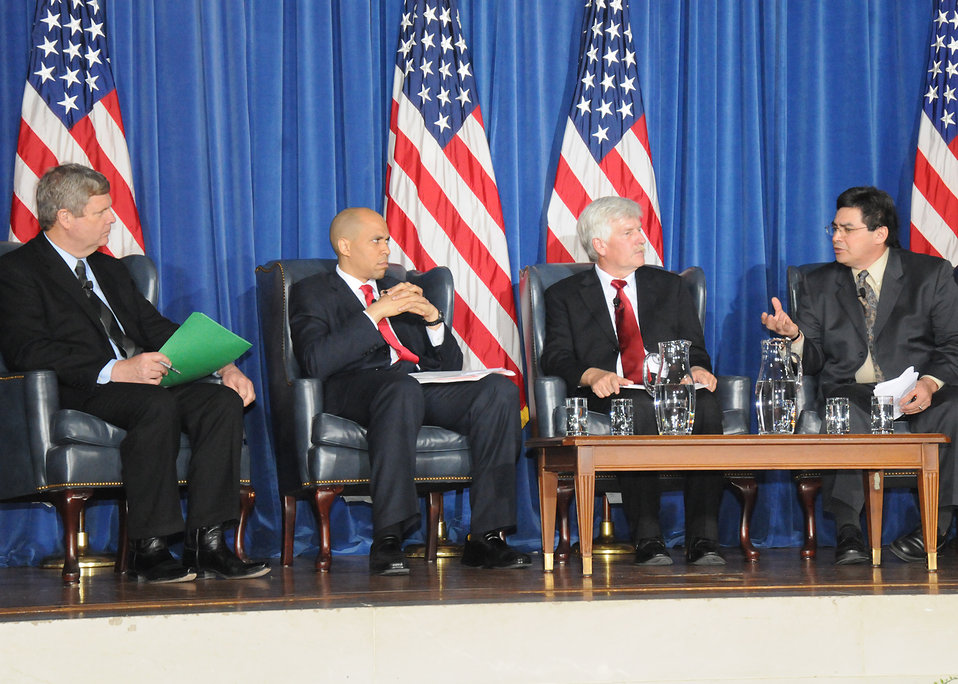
Agriculture Secretary Tom Vilsack listens to Vice President of the Archibald Bush Foundation and Nations Team Leader Jamie Pinkham a member of the panel on “Conserving working lands for the benefit of all Americans.' (Seated to the left of Agriculture Secretary Tom Vilsack are Mayor of Newark, N.J., Cory Booker and Indiana farmer and conservationist Ray McCormick) at the Department of Interior in Washington, D. C., on Friday, April 16, 2010, USDA photo 10di1316-87